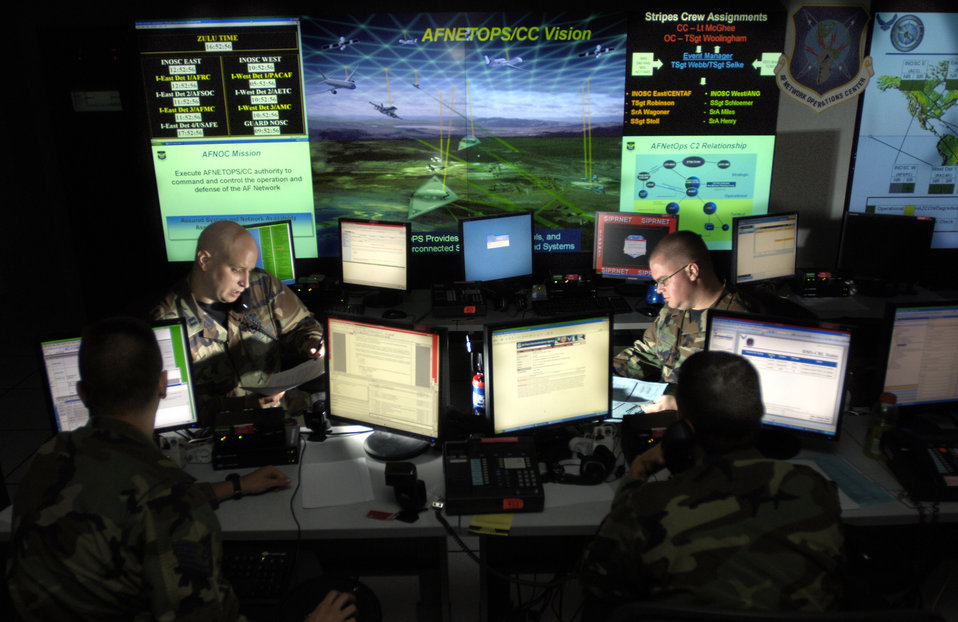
Air Force Cyber Command online for future operations

Capt. Jason Simmons and Staff Sgt. Clinton Tips update anti-virus software for Air Force units to assist in the prevention of cyberspace hackers July 12 at Barksdale Air Force Base, La. The Air Force is setting up the Air Force Cyberspace Command soon and these Airmen will be the operators on the ground floor.